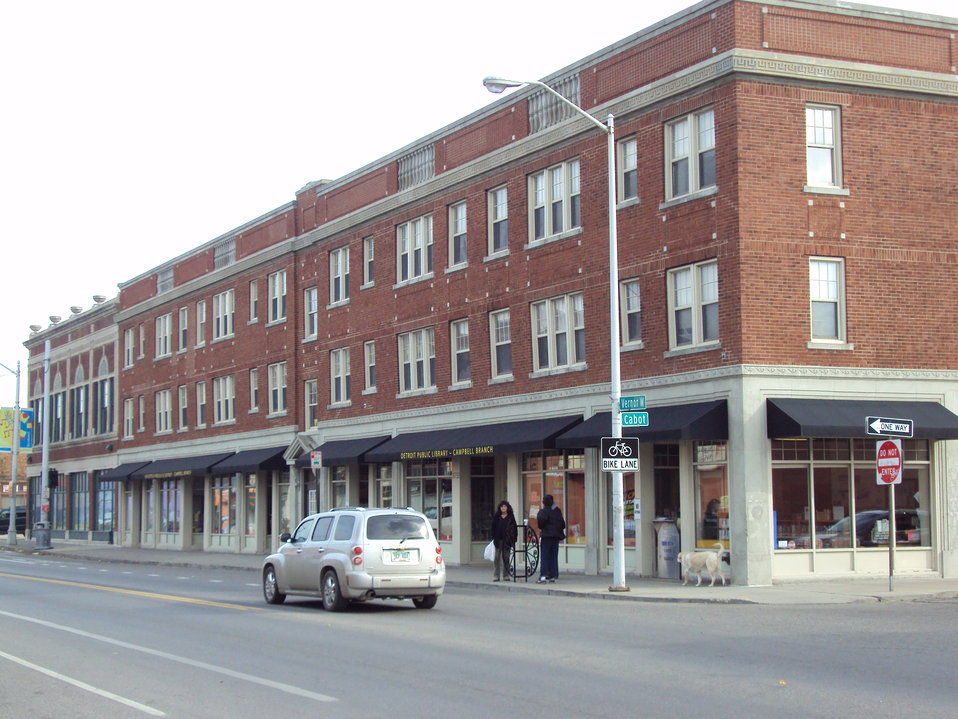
Detroit Public Library - Campbell Branch (Detroit)